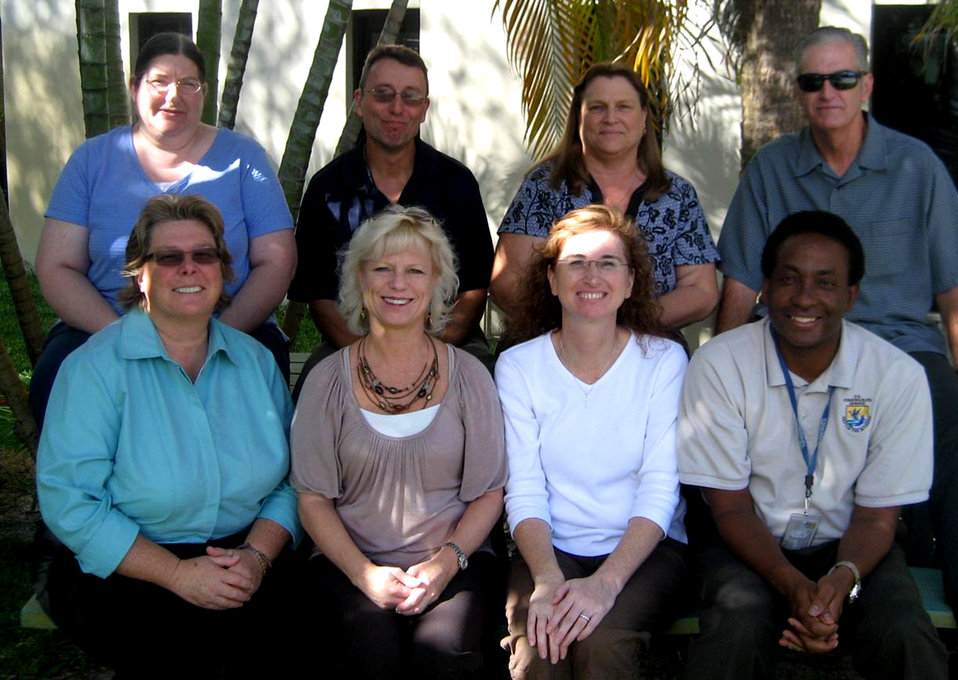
South Florida Ecological Services Office

Ten Staff Members Bring Military “Edge” to the South Florida Ecological Services Office. “Hat’s off to all of our veterans, I salute them for their service and sacrifice. I also salute them for continuing to serve America as part of the U.S. Fish and Wildlife Service. Their pride and patriotism are displayed everyday in the great work they do,” said Larry Williams, Field Supervisor for the SFESO. 1. SFESO Veterans - From left bottom row: Missi Hatfield, Patti Bowser, LeeAnn Kelso and Ken Warren. From left upper row: Liz Landrum, Chuck Kelso, Sandy Cardenas and Wayne Burden. (Shawn Christopherson and Brian Scofield were not available for the photo).